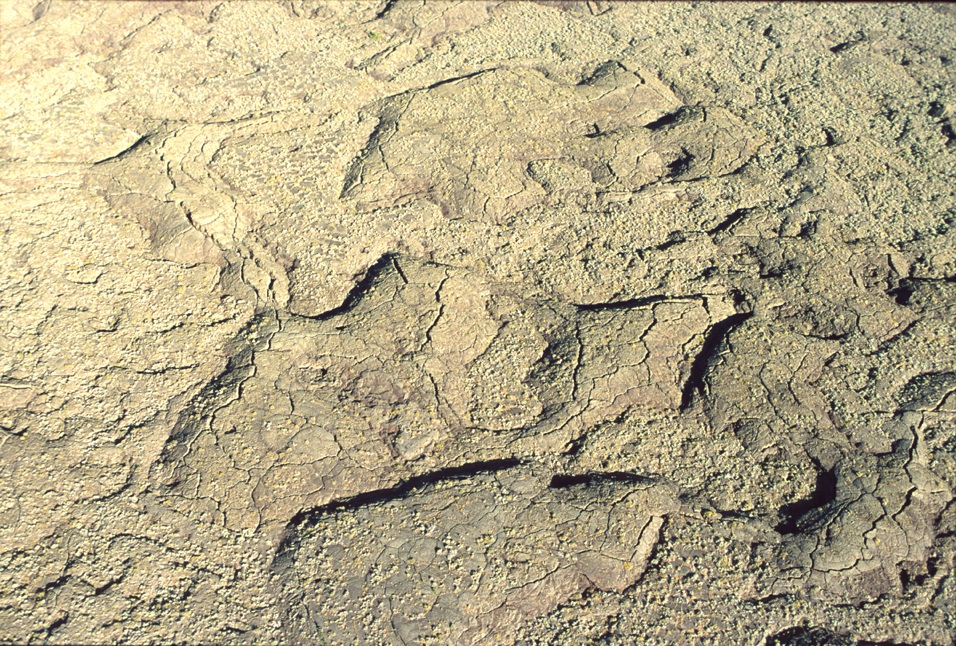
Shoshone Field Office USRD Upper Snake River District